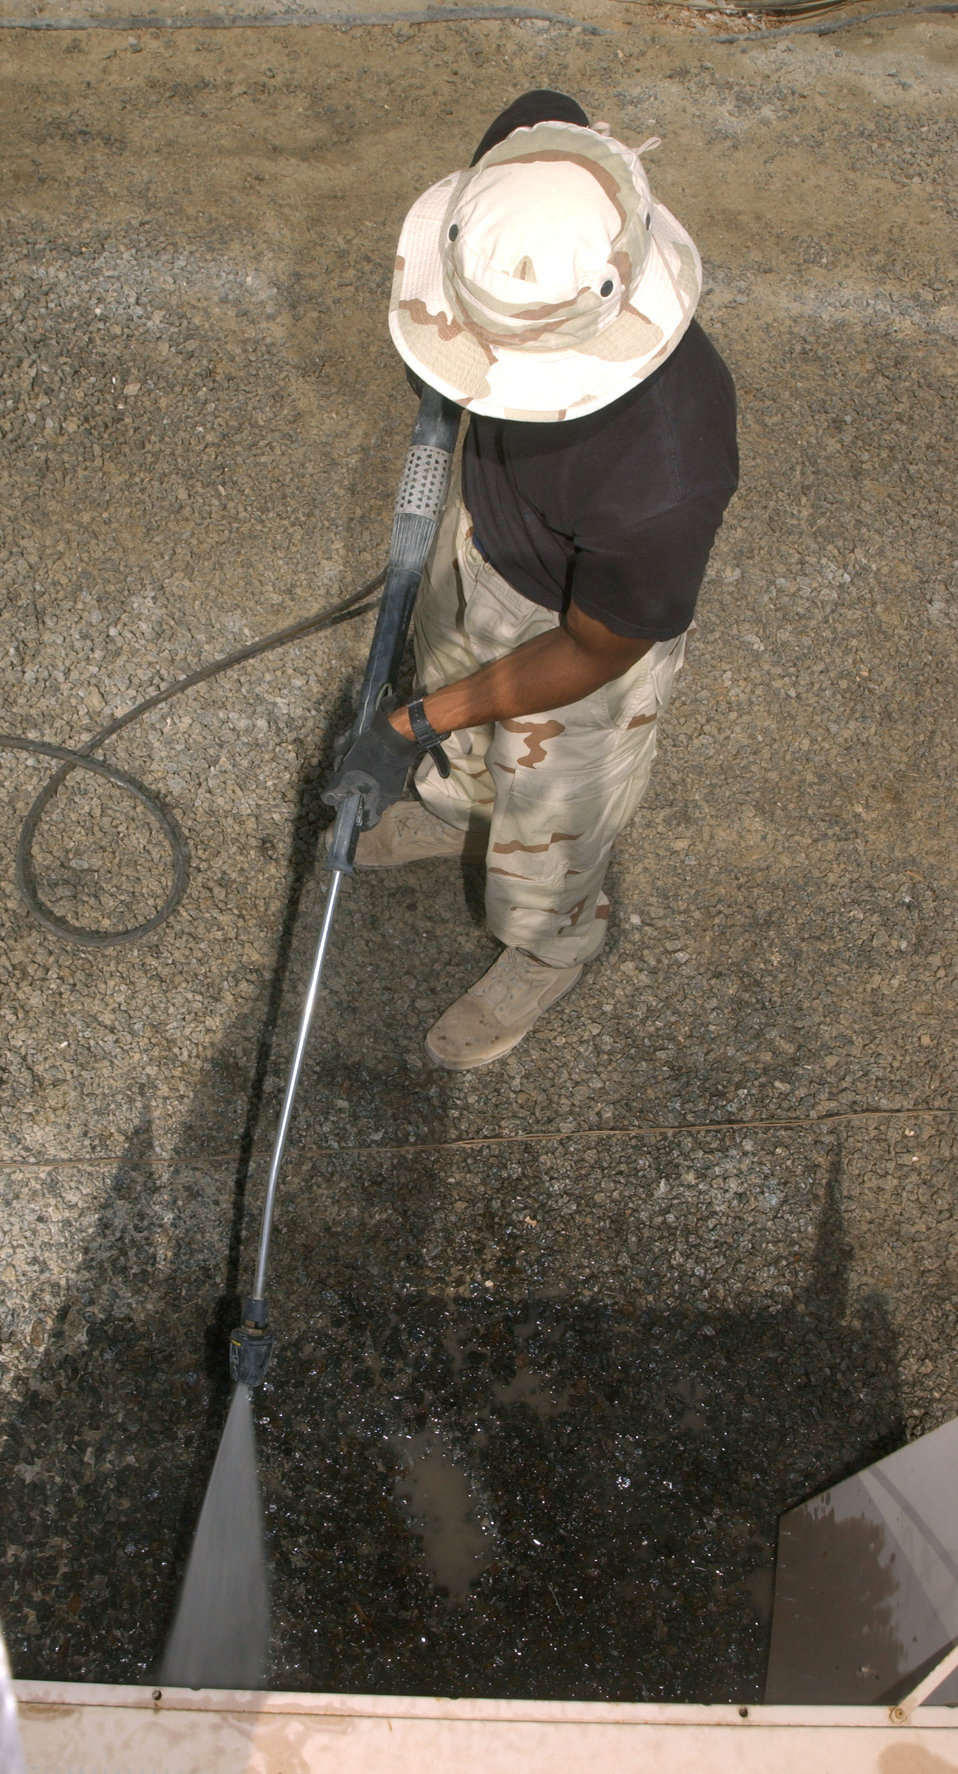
Keeping it cool

Senior Airman Robert George sprays the coils of an air-conditioning unit with water outside one of the dining facilities at this deployed location in Southwest Asia Oct. 11. The water rinses off hydrochloric acid used previously to clean sand, grit and debris from the unit's coils, which are much like that of an automobile radiator. There are better than 3,000 air-conditioning units at this base, which is home to about 1,500 Airmen and the 380th Air Expeditionary Wing. Airman George is assigned to the 380th Expeditionary Civil Engineer Squadron and deployed from Yokota Air Base, Japan.